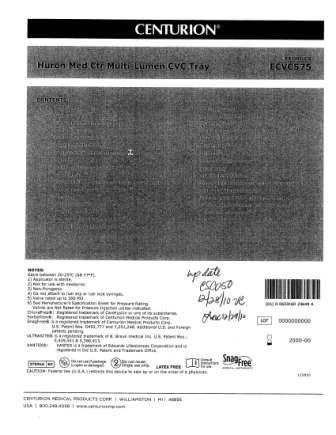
RECALLED - Convenience kits which contain bacteriostatic sodium chloride solution by American Regent

April 1, 2011 - Product Recall - Centurion Medical Products Initiates Voluntary Recall of Customized Convenience Kits (including select Central Venous Catheter, PICC Insertion, and VAD Trays) that contain American Regent’s Bacteriostatic Sodium Chloride Injection, USP, 0.9% 30 mL Multiple Dose Vials.